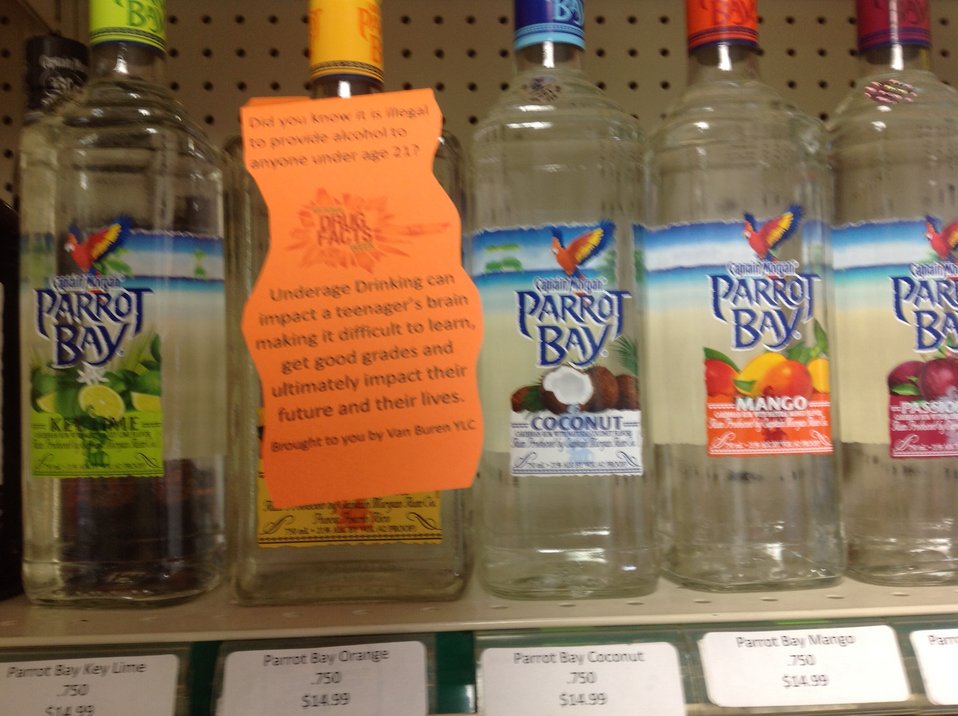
Getting the Word Out

Teenagers from the Van Buren County SAFE Coalition's, Youth Leadership Council (YLC) in Keosauqua, Iowa participate in various events during National Drug Facts Week, 2014.